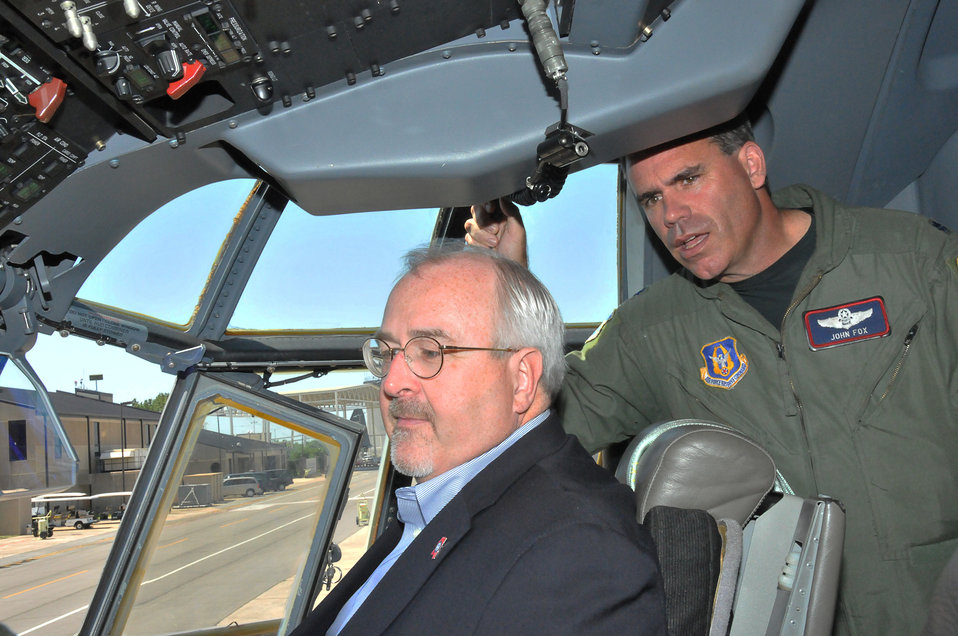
FEMA Administrator Visits Hurricane Hunters

Craig Fugate, the Federal Emergency Management Agency administrator, looks over the control panel of a WC-130J Hercules as Lt. Col. John Fox, a navigator with the 53rd Weather Reconnaissance Squadron Hurricane Hunters at Keesler Air Force Base, Miss., briefs the unit's mission. Mr. Fugate was at Keesler AFB April 29, 2010, to visit the squadron and discuss hurricane preparedness.